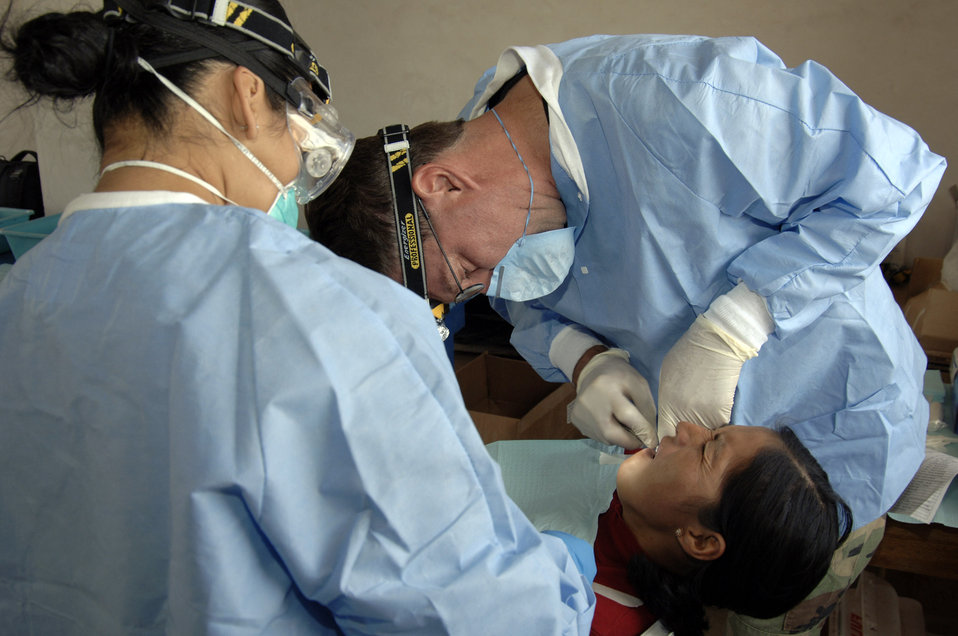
Despite reduced numbers, final New Horizons MEDRETE a success

Dr. (Lt. Col.) Walter Weaver and Senior Airman Betty Goldsmith, a dental technician, extract a tooth from a Peruvian woman during a medical mission in Mollepata, Peru, Aug. 1. A team of 19 medical professionals from the 433rd Medical Group at Lackland Air Force Base, Texas, are deployed to Ayacucho, Peru, to support New Horizons - Peru 2008, a humanitarian mission set on bringing quality-of-life construction projects and a total of nine medical missions to underpriviliged Peruvians.